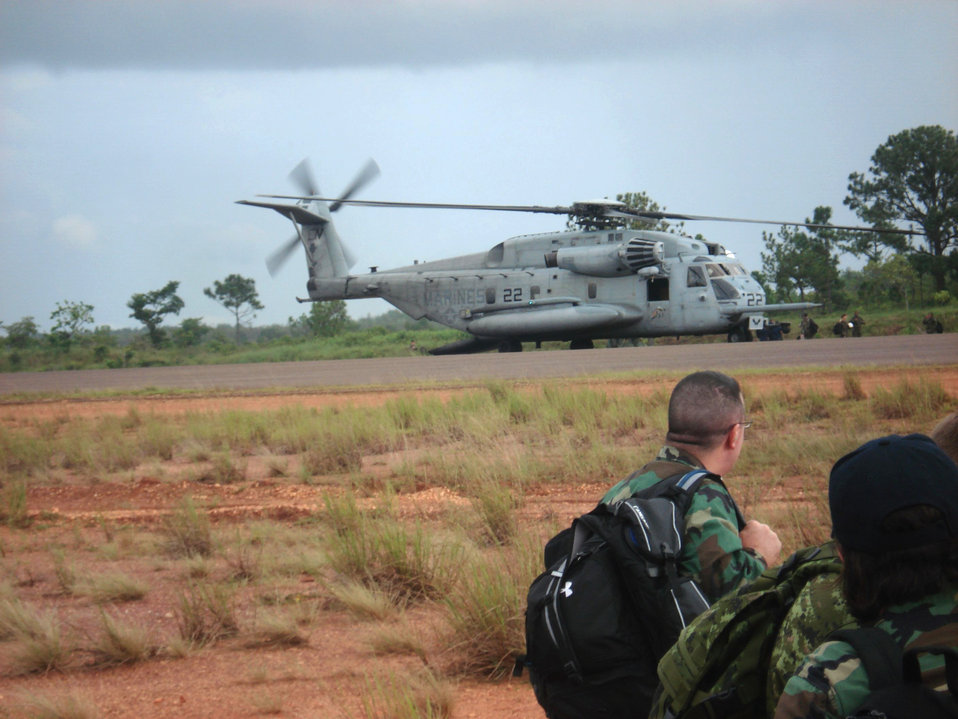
Here we see a US Navy helicopter delivering personnel and supplies to a remote clinic during Operation Continuing Promise (CP), 2008.